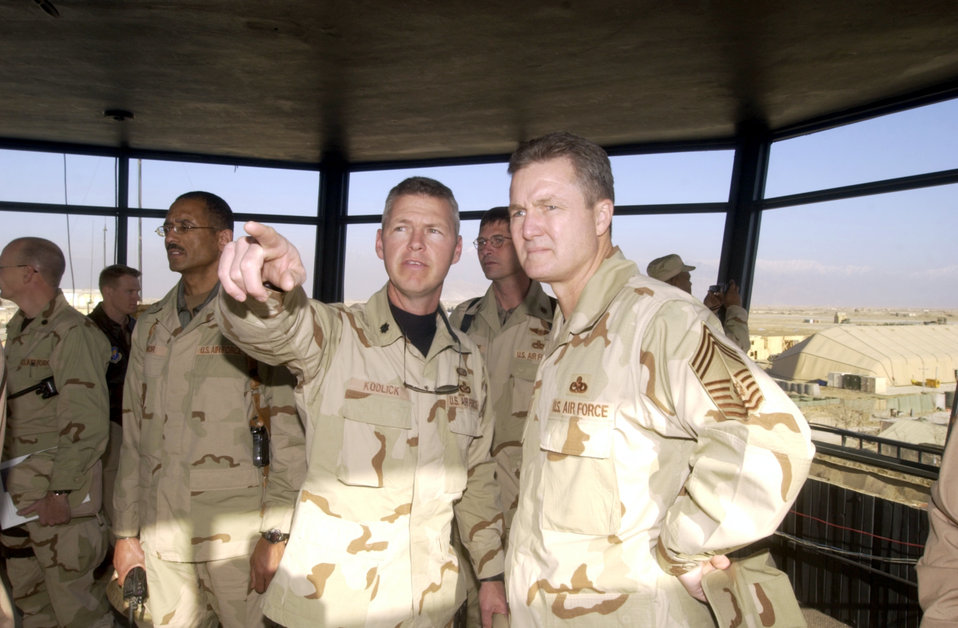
Christmas visit

BAGRAM AIR BASE, Afghanistan -- Lt. Col. Les Kodlick shows Chief Master Sgt. of the Air Force Gerald R. Murray some improvements to the airfield from the control tower here. Murray and Gen. John P. Jumper, Air Force chief of staff, visited the base Dec. 19. Kodlick is the 455th Expeditionary Support Squadron commander.